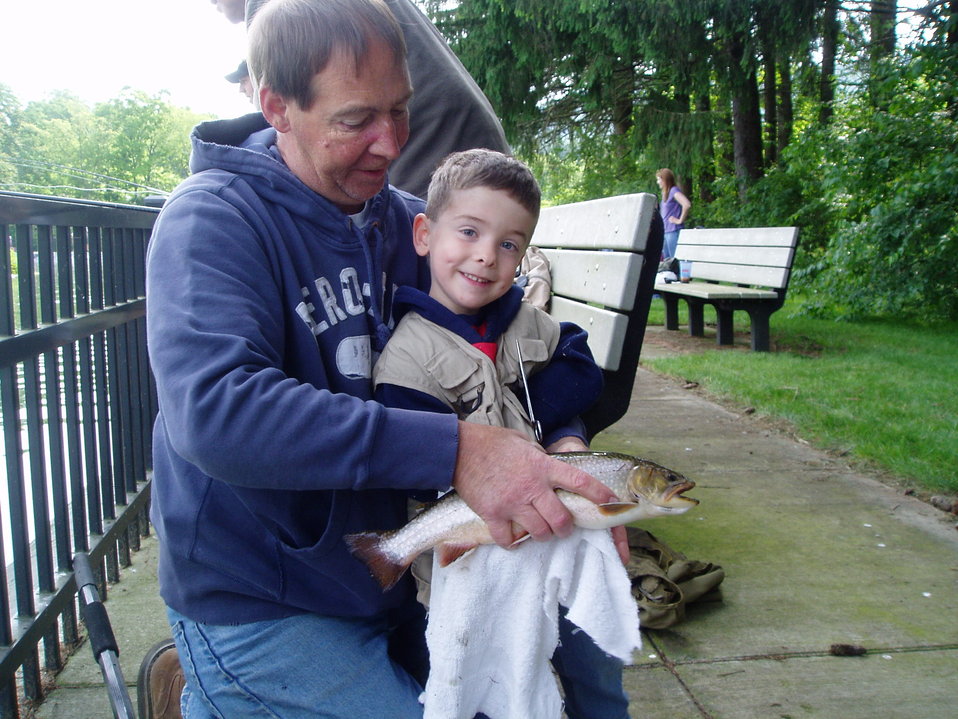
Northeast Fishery Center's Annual Fishing Event

Young boy with fish at the Northeast Fishery Center's annual fishing event in Lamar, PA.